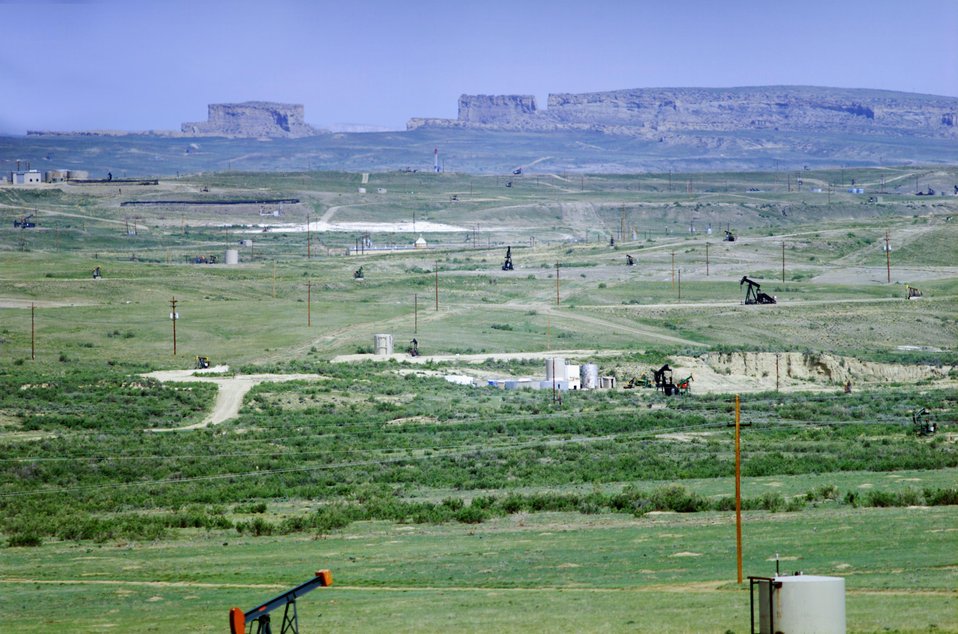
A wide shot of Naval Petroleum Reserve No.3 (NPR-3)reveals many pump jacks and other NPR-3 facilities. NPR-3 is located about 25 miles north of Casper, Wyoming.

The Rocky Mountain Oilfield Testing Center (RMOTC) is a Department of Energy field test site for emerging and developing technologies to address critical energy issues. The field test site, located on Naval Petroleum Reserve No.3 (NPR-3), is a 10,000-acre site. There are approximately here are approximately 700 well bores with 600 producing wells ranging in depth from 500 to 5,000 feet.